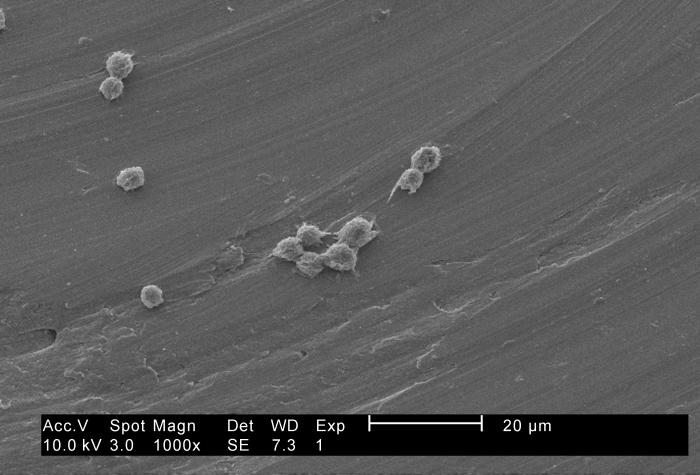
Under a moderately-high magnification of 1000X, this 2002 scanning electron micrograph (SEM) revealed some of the ultrastructural morphology exhibited by a number of Hartmannella vermiformis amoebae trophozoites.